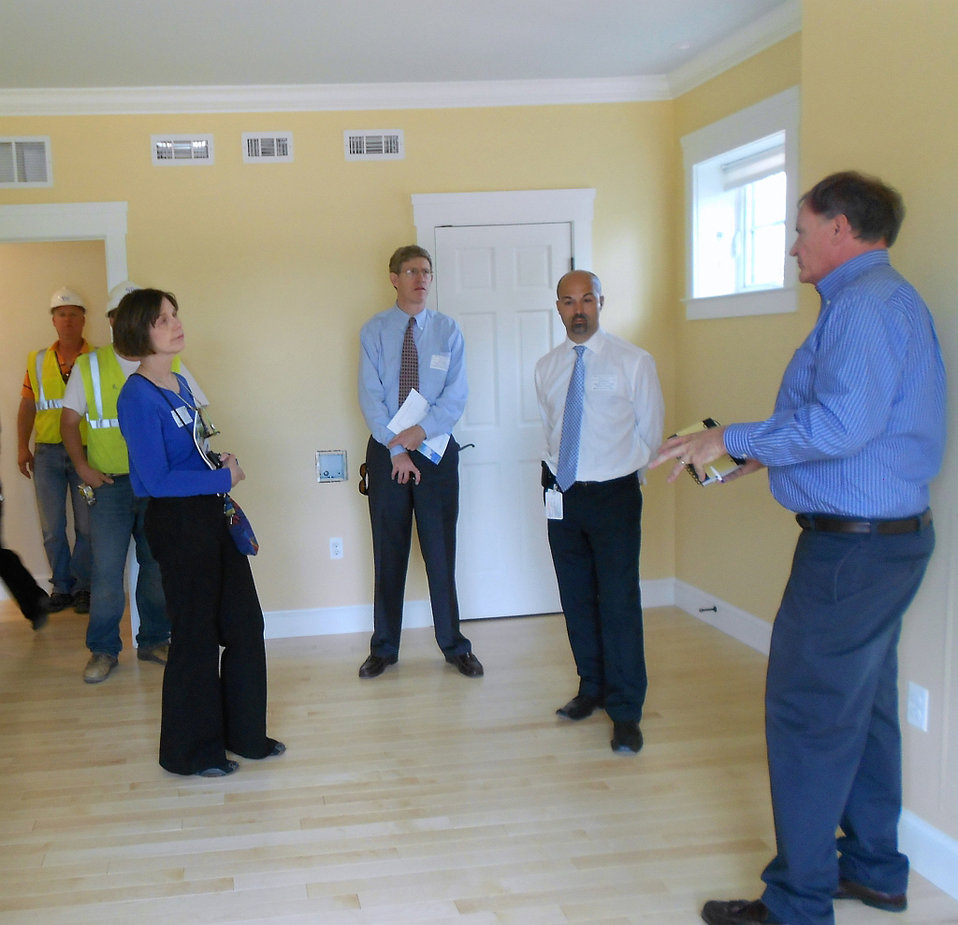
Net Zero Energy Residential Testing Facility Tour

Dr. Hunter Fanney (right) Chief of the Building Environment Lab in NIST’s Engineer Lab describes the NIST Net Zero Energy Residential Test Facility’s multiple air distribution systems to Senate Energy & Natural Resources Committee Staffers Amit Ronen (2nd from right), Allen Stayman (center) and Deborah Estes (left) while exploring a 2nd story bedroom.